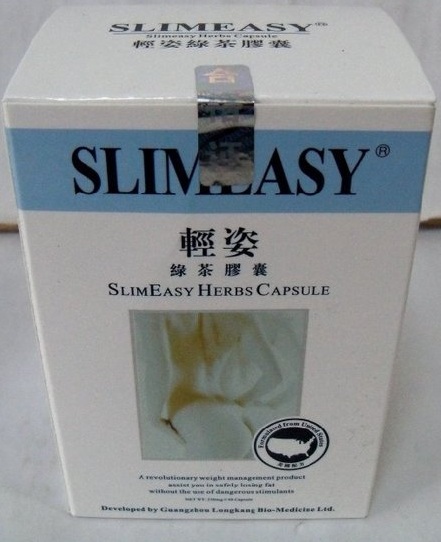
SlimEasy Herbs Capsule

December 19, 2013 - The FDA is advising consumers not to purchase or use 'SlimEasy Herbs Capsule,' a product promoted and sold for weight loss. The product was found to contain undeclared sibutramine. For more information, go to www.fda.gov/Drugs/ResourcesForYou/Consumers/BuyingUsingMe...

And read this Consumer Update: Beware of Fraudulent ‘Dietary Supplements’